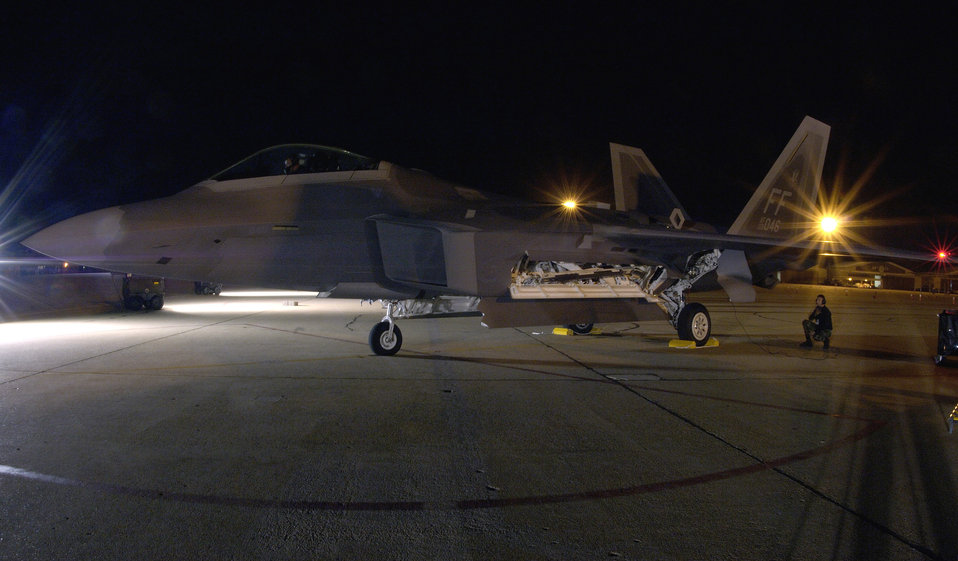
F-22A Raptor

SAN ANTONIO, Texas (AFPN) -- The Air Force has changed the designation of the F/A-22 to the F-22A Raptor. The service designated it